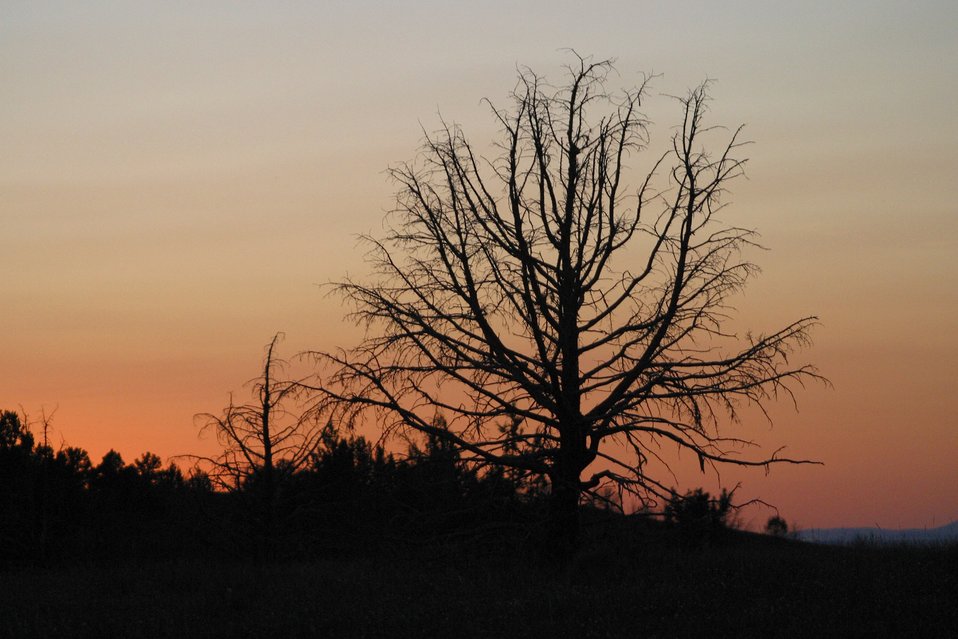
Sun set in the Kiger Wild Horse Viewing Area.